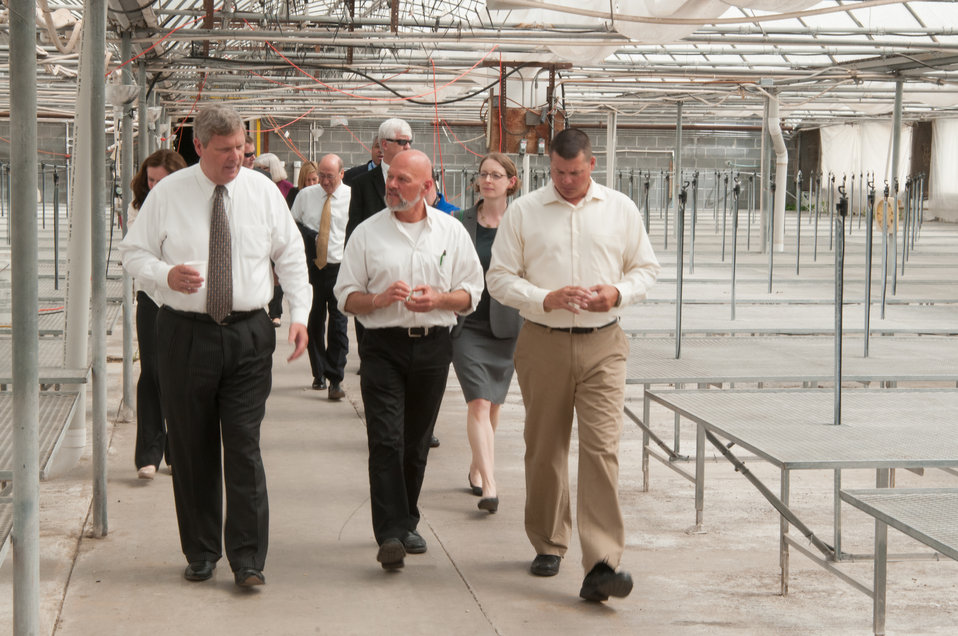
Agriculture Secretary Tom Vilsack visits Blue Ridge Produce in Elkwood, VA on Thursday, May 30, 2013. Blue Ridge Produce is a local food hub aggregating Virginia-grown fruits and vegetables for sale to wholesale customers in the Capitol region. Blue Ridge customers include supermarkets, food service companies serving institutions and regional distributors. The company recently received a contract with a restaurant franchise to supply all of their restaurants in the mid-Atlantic region with lettuce, onions, peppers and jalapeño peppers. (L to R Agriculture Secretary Tom Vilsack, Blue Ridge Produce Jim Epstein, and Blue Ridge Produce Mark Seale).USDA Photo by Bob Nichols.